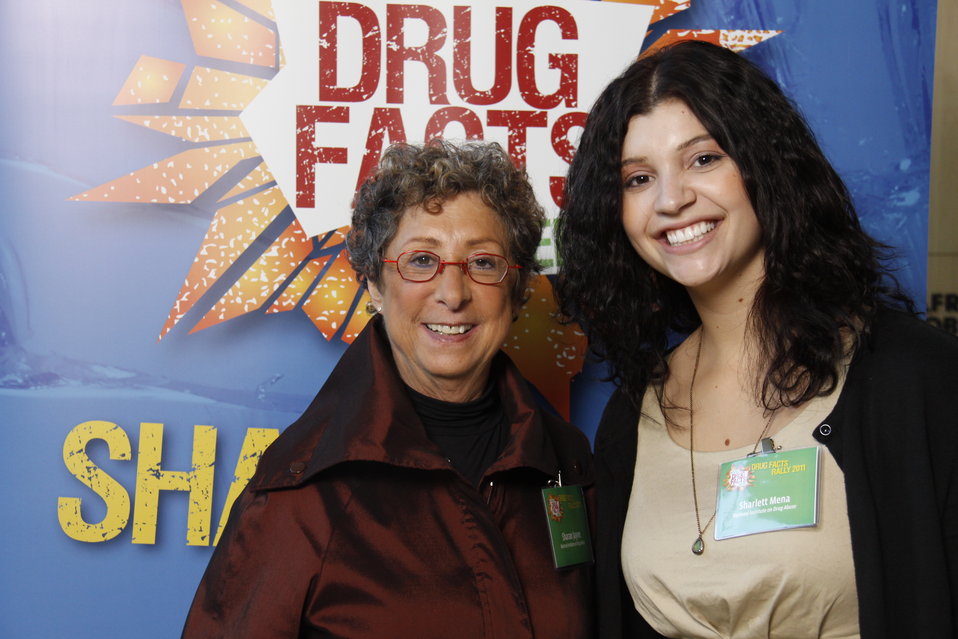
NDFW Mentor Event